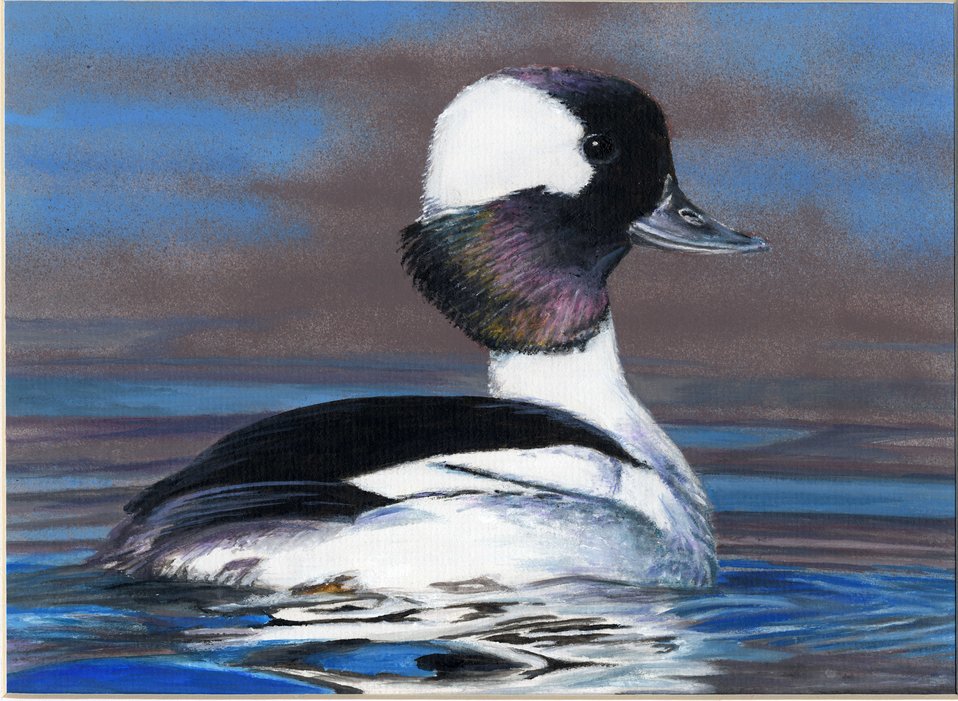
Utah

2012 Jr Duck Stamp Program
State Best of Show
Utah